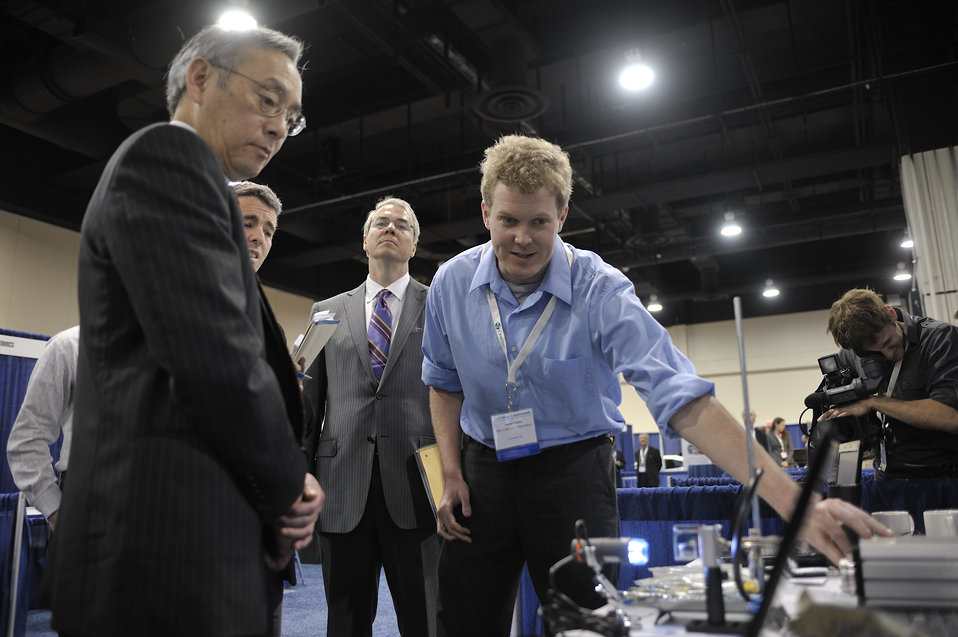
ARPA-E Energy Innovation Summit 2011, 59 of 83

Steven Chu, Secretary, United States Department of Energy speaks with Sun Catalytix at the summit's Technology Showcase.